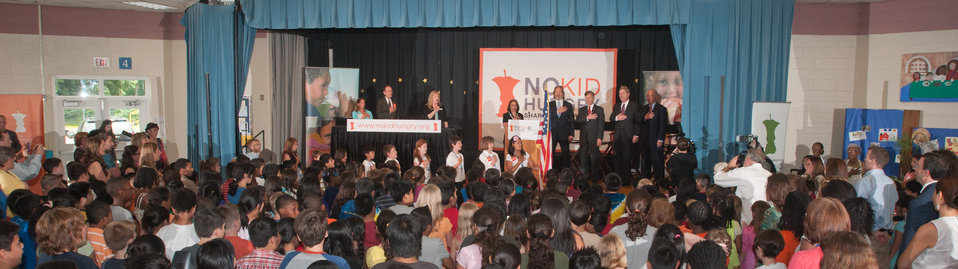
Left to right on stage School Board Vice Chairperson Abby Raphael, Arlington County School Superintendent Patrick K. Murphy, Federation of Virginia Food Banks Executive Director Leslie Van Horn, Barcroft Elementary School Principal Miriam Hughey-Guy, No Kid Hungry National Campaign Spokesperson Jeff Bridges, Virginia Governor Bob McDonnell, U.S. Department of Agriculture Secretary Tom Vilsack and Share our Strength founder and Executive Director Bill Shore recite the Pledge of Allegiance with the students, parents and teachers of Barcroft Elementary School during the launch of the Virginia No Kid Hungry Campaign at the Arlington, VA, school on Tuesday, June 7, 2011.